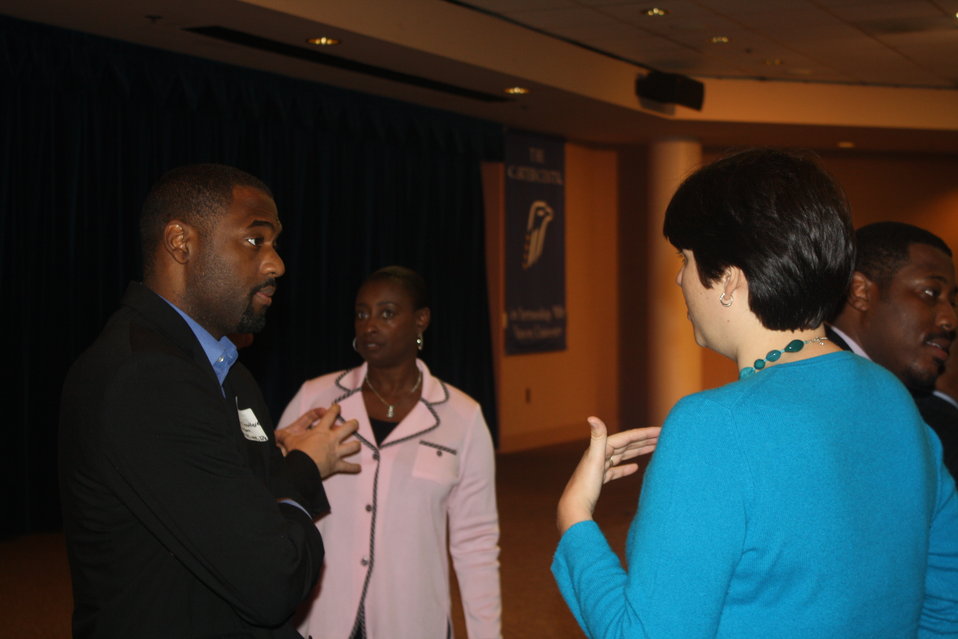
Faith-Based and Neighborhood Partnership launch at Atlanta's Carter Center